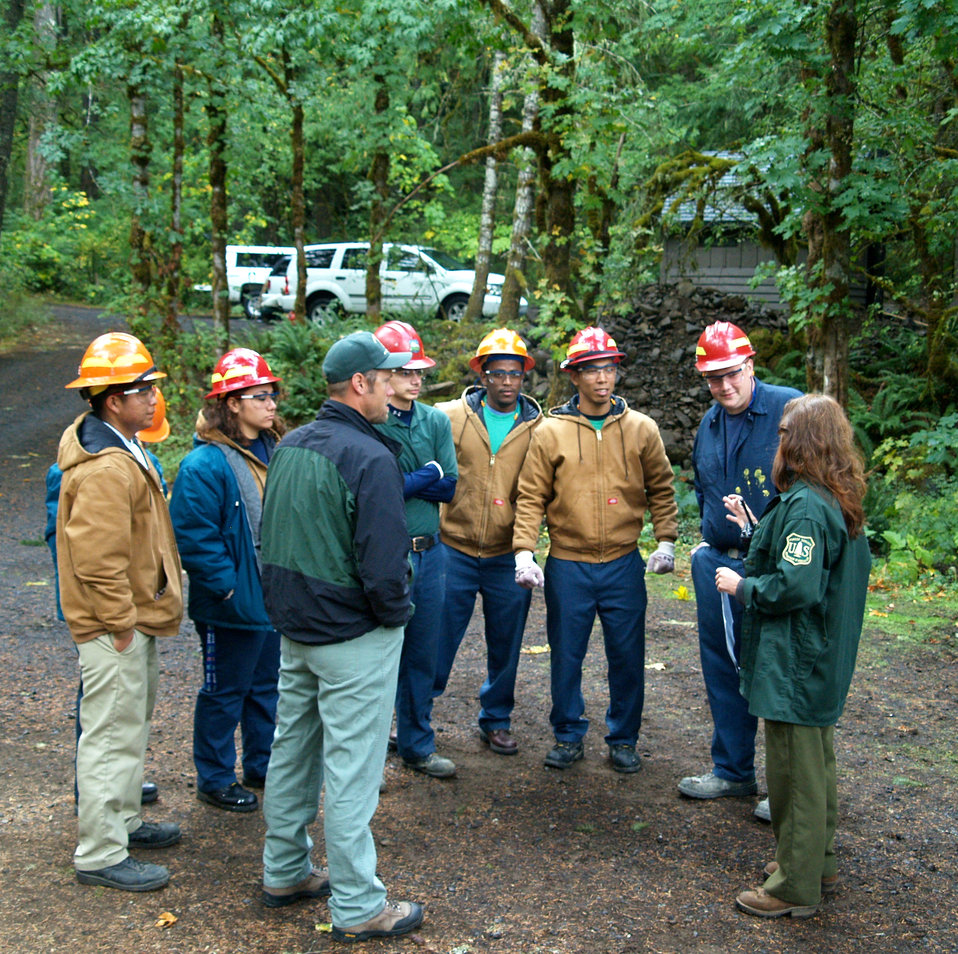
September 29, 2009. Estacada, OR. Prior to beginning a stream restoration project, Timber Lake Job Corps Center students get a safety briefing from USDA Forest Service biologist Kathryn Arendt (r). The project enhances the spawning areas of native salmon on the Clackamas River.